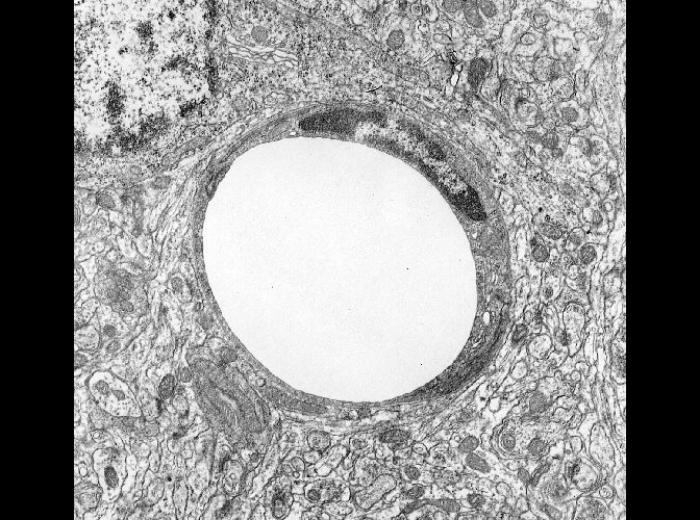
Normal mouse brain capillary. Cross section. Transmission electron micrograph.